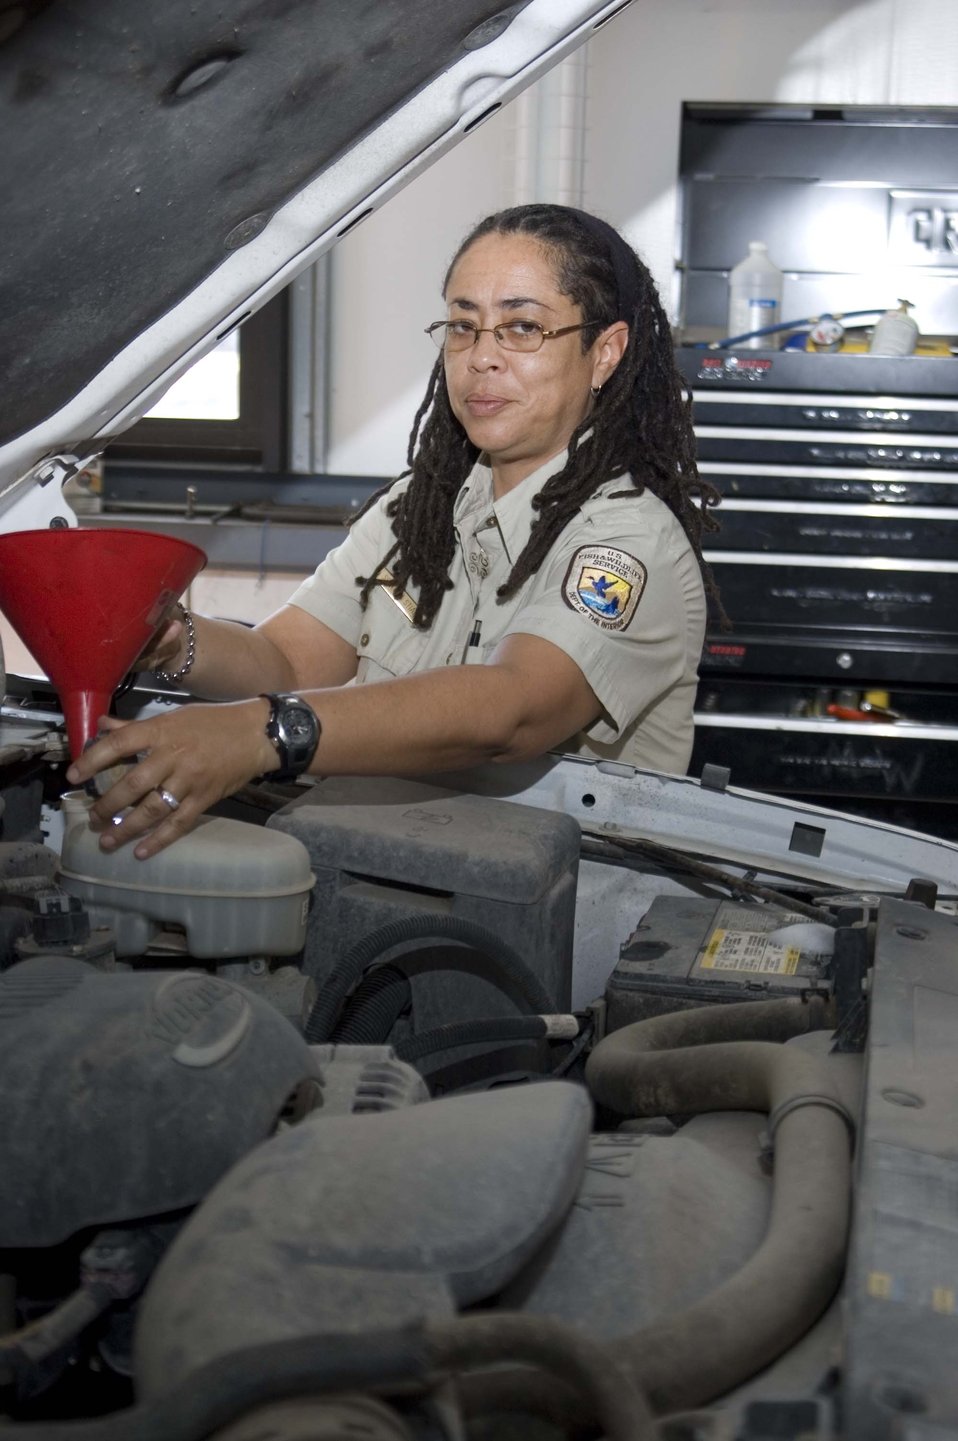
Shelley Stiaes and oil change

Shelley Stiaes, refuge manager of St. Vincent National Wildlife Refuge in Florida, performs an oil change on a refuge truck at Bayou Sauvage National Wildlife Refuge in New Orleans.